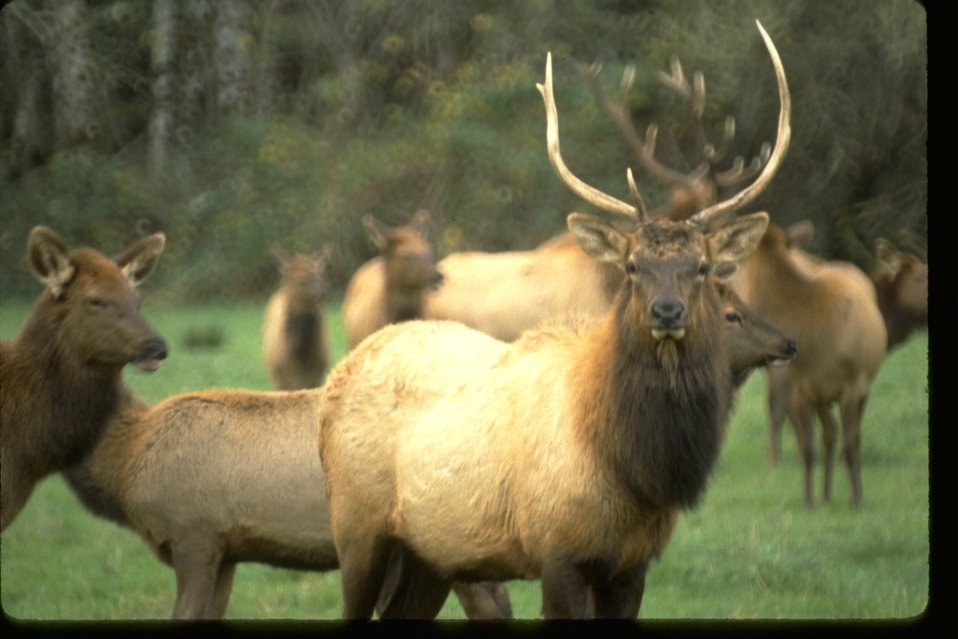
Elk, face to face.